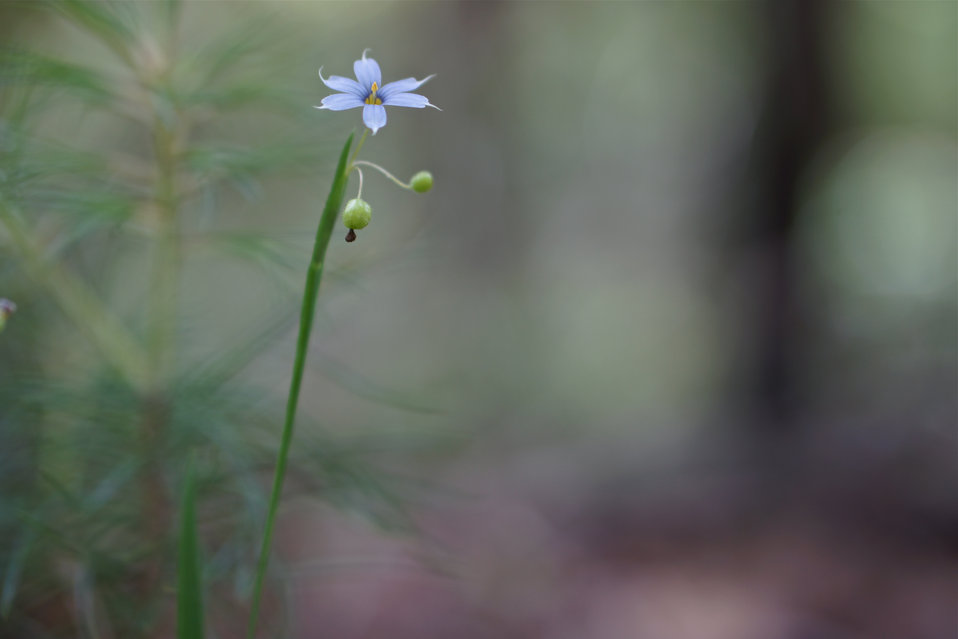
Roadside flower

In May, bog conservationists from Tennessee, North Carolina, and Georgia convened in the north Georgia mountains for the spring, 2014 meeting of the Bog Learning Network. The event provided an opportunity for biologists to see, first hand, the result of management efforts at two north Georgia bogs. More importantly, the outings provided an opportunity to share innovative approaches to bog management, such as the role of the Georgia Plant Conservation Alliance in conserving rare plants and coordinating a cadre of volunteers to work on bog management.

The Bog Learning Network was convened in the winter of 2013 as a way to bring together people working for bog conservation across the Southern Appalachians. Southern Appalachian bogs are one of North America’s rarest habitats and home to many rare plants and animals.